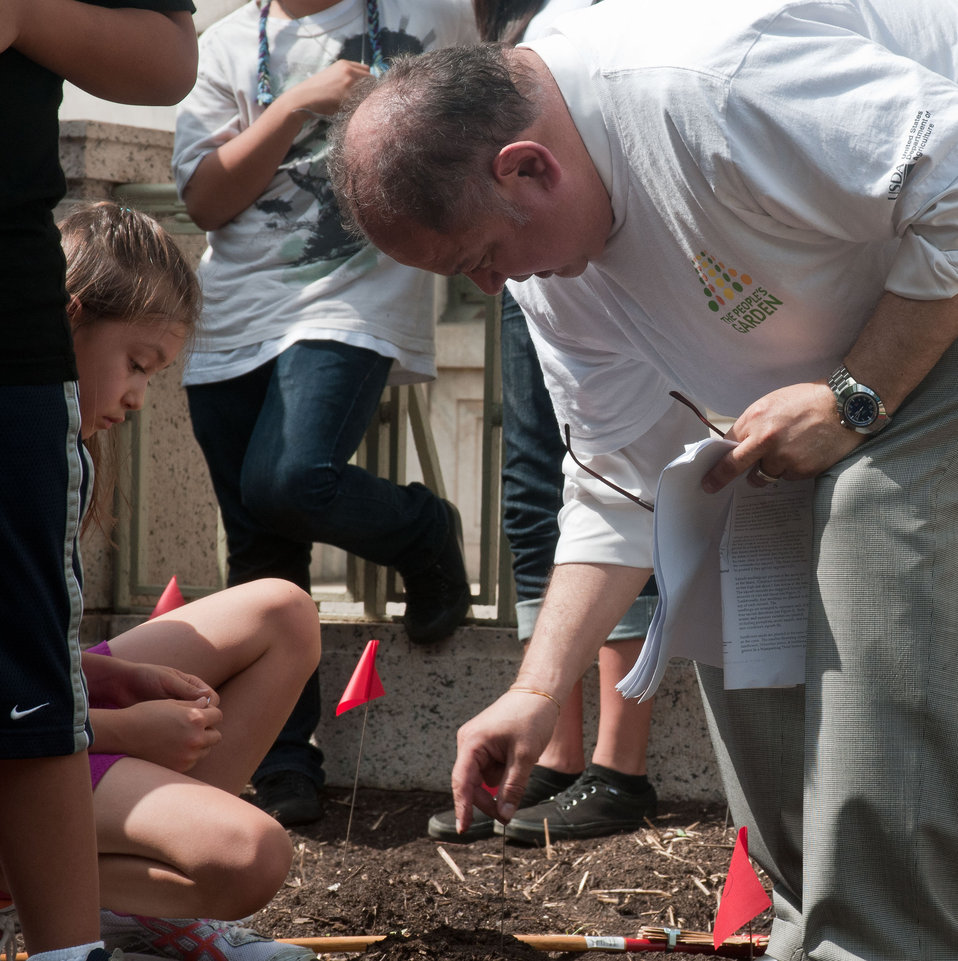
Executive Master Gardners such as U.S. Department of Agriculture (USDA) Operations Program Specialist Richard Fierroz, right, helped more than 30 students from Eastern and Western Tribes, Southeast Alaska, and Tuba City, Arizona on Wednesday, April 27, 20ll in Washington, DC, when they came to plant vegetable seeds that are indigenous to North America at came to the U.S. Department of Agriculture. The plants in particular are known as the Roots of American Agriculture, the design is that of a Hidatsa Three Sisters Garden, the traditional design of the Hidatsa people. In the northern planes, the Hidatsa, Mandan, and Arikara peoples gardened along the floodplain of the Missouri River using this design. It is designed to have alternating, staggered rows of corn and beans, with sunflowers growing along the northern edge of the garden. Squash is planted after every row of corn and beans and around the east, south, and west edges of the garden.